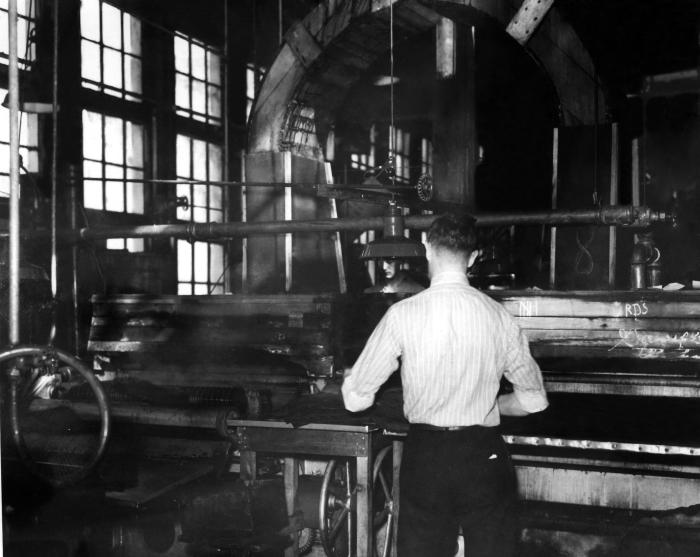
This historical image was provided by the Center for Disease Control's (CDC), National Institute for Occupational Safety and Health (NIOSH). The photograph, shot inside a Connecticut fur processing plant, depicted a hatters' industry worker performing an unidentified task involved in the processing of animal furs, which would be converted into hatters' materiel. Working with 'carroted' fur, fixed with mercury nitrate, workers could be exposed to airborne mercury, thereby, suffering the detrimental neurologic consequences from its inhalation. Using steam facilitated the airborne dissemination of this neurotoxic element. Though photographed from behind, it appeared that this man was not wearing a filtered breathing mask.